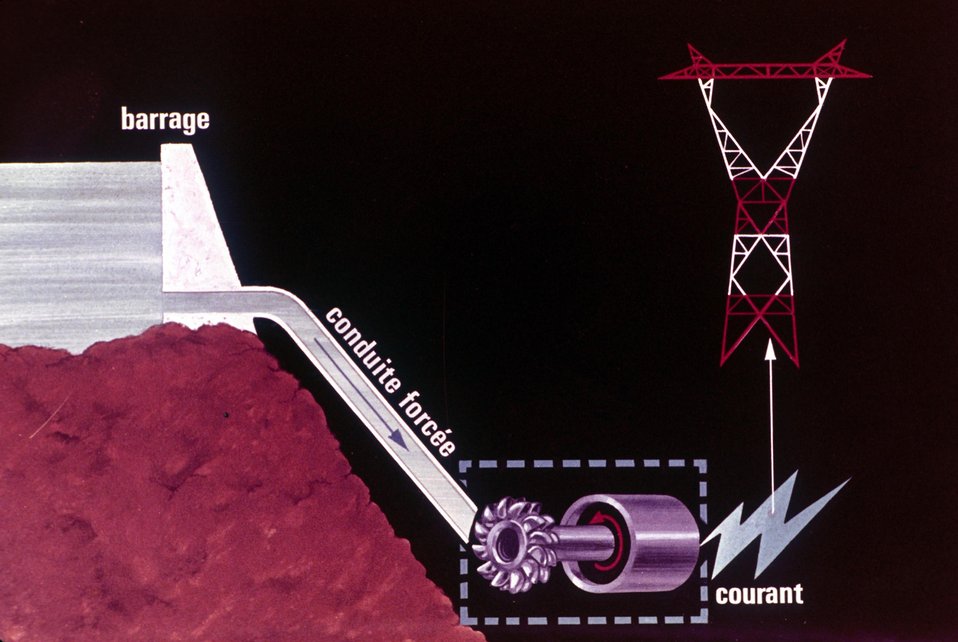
Comment fonctionne une centrale hydraulique?